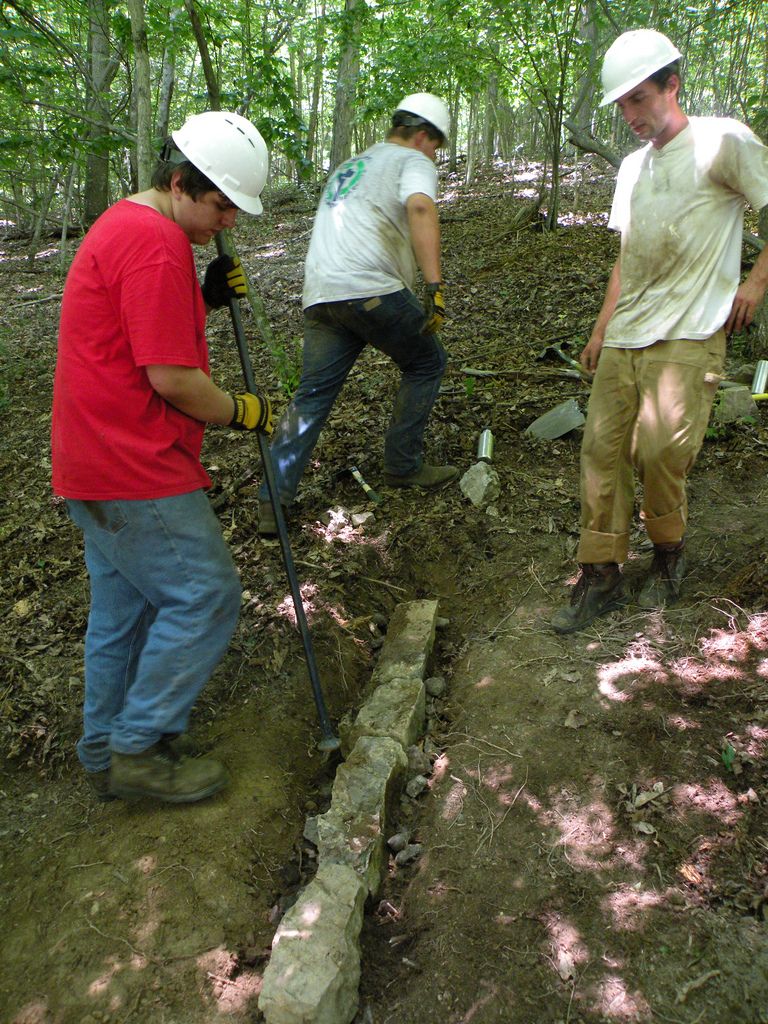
Building a water bar

U.S. Fish and Wildlife Service